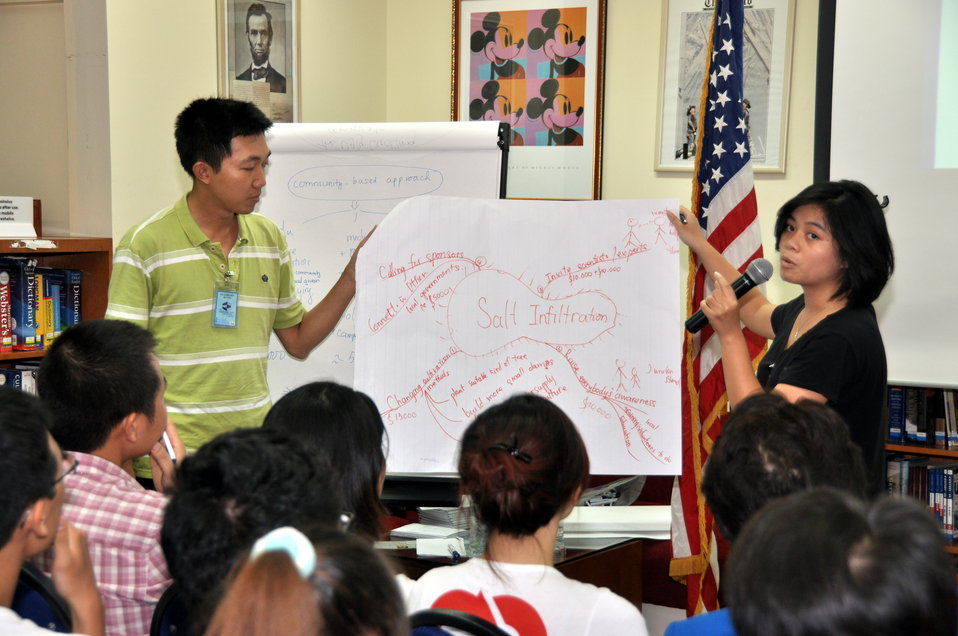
Climate Change Talk at the American Center

Hanoi, May 28, 2013.